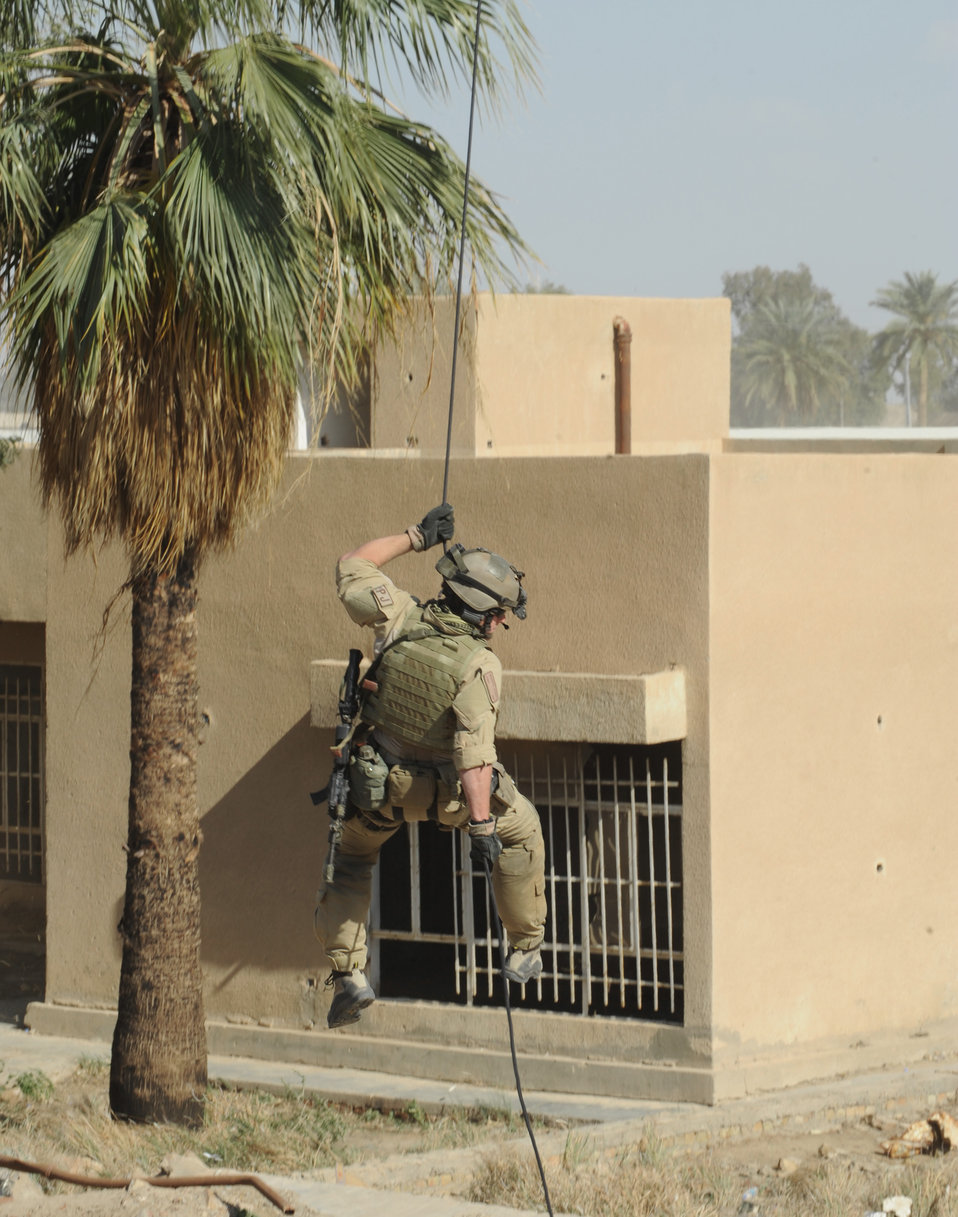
Balad squadron serves as Iraq's 'guardian angels'

Senior Airman Matthew Street rappels from an HH-60 Pave Hawk helicopter April 10 during a proficiency exercise outside of Baghdad, Iraq. He is a pararescueman from the 64th Expeditionary Rescue Squadron at Joint Base Balad, Iraq.